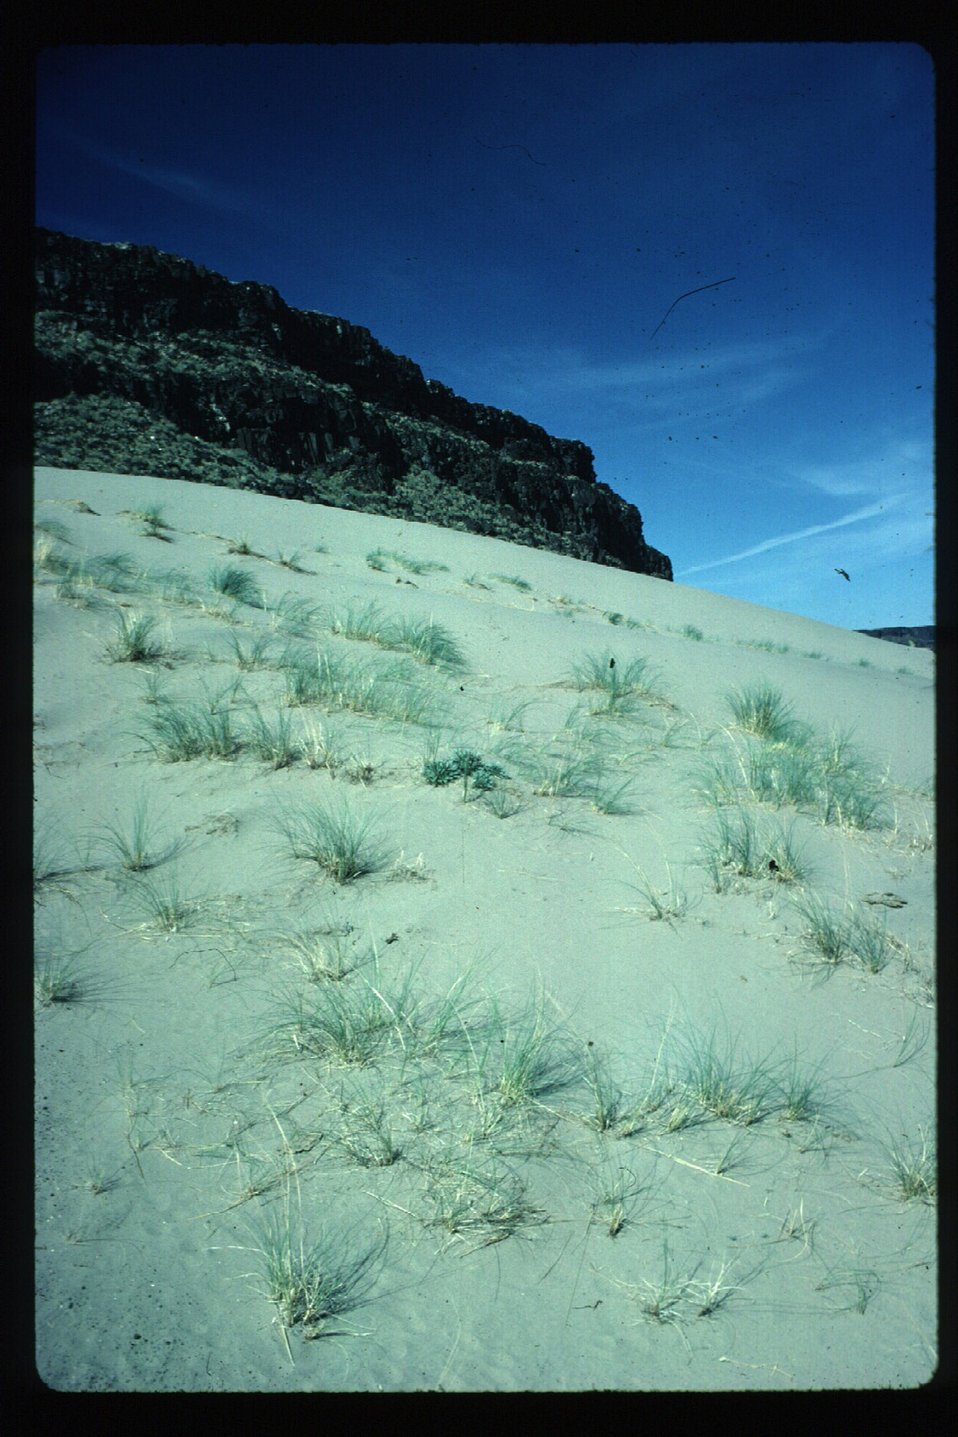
Sand Dunes Halverson Lake area Birds of Prey National Conservation Area BOP NCA Owyhee Field Office LSRD Lower Snake River District